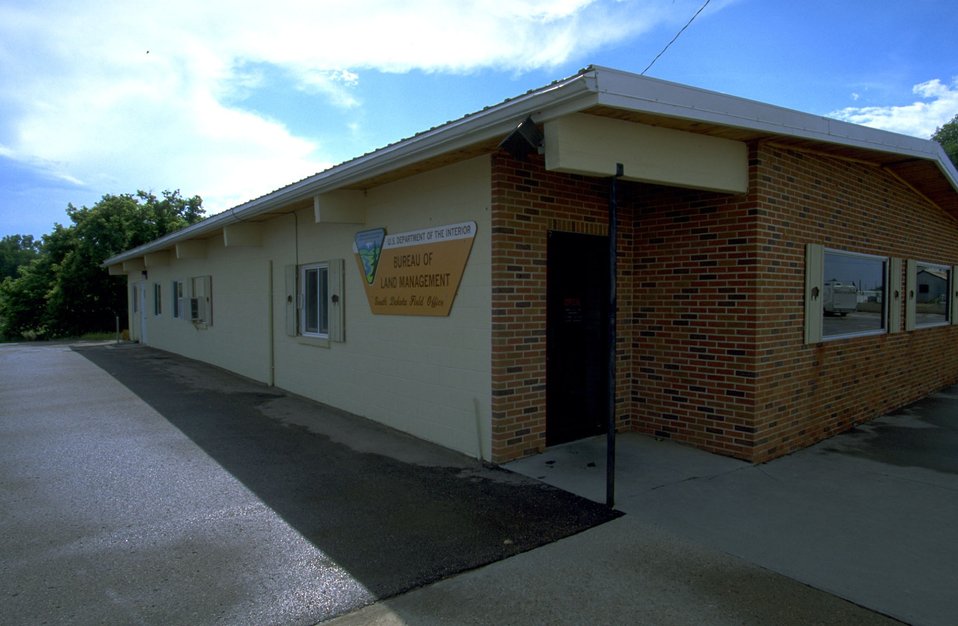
South Dakota Field Office looking south